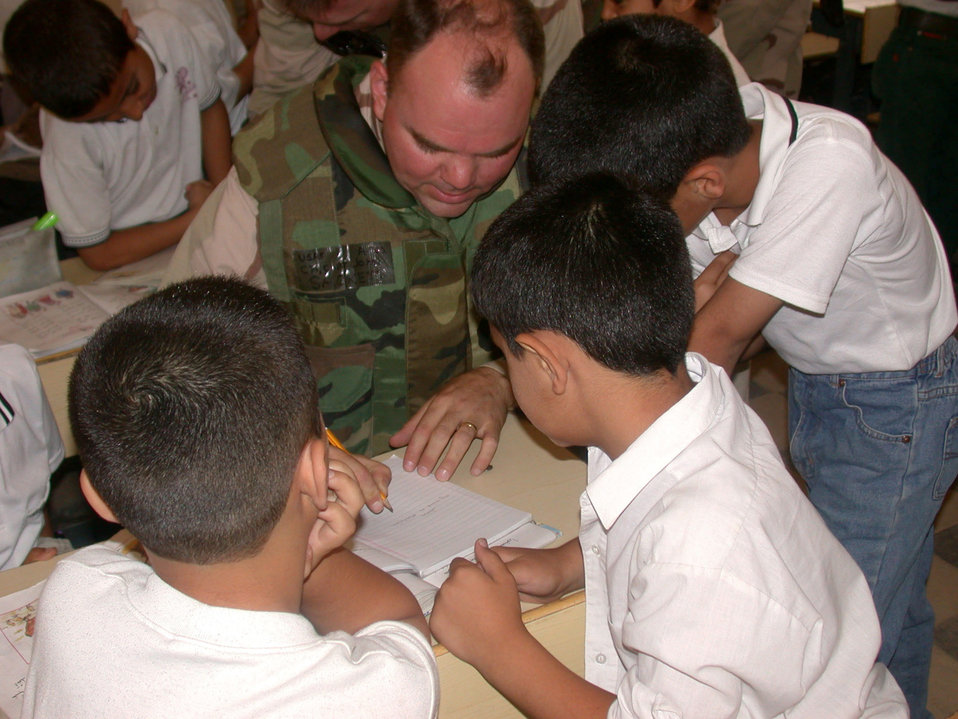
Teaching the locals

OPERATION IRAQI FREEDOM -- Chaplain (Capt.) John Sackett shows Iraqi pupils how to write their names in English during a recent trip to Baghdad. Sackett is assigned to the 380th Air Expeditionary Wing at a forward-deployed location.